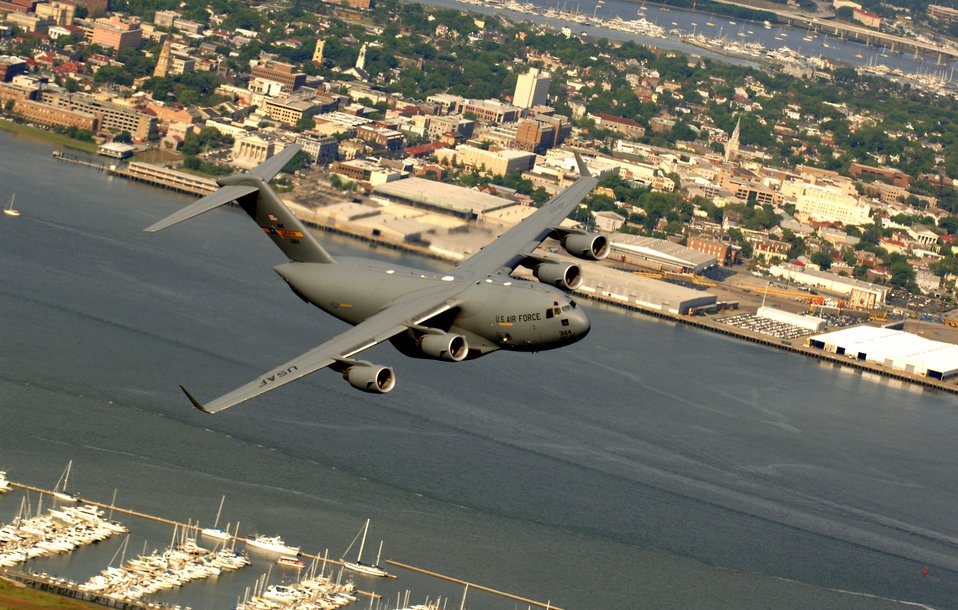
C-17s over Charleston

A C-17 Globemaster III from the 14th Airlift Squadron, Charleston Air Force Base, S.C., flies over downtown Charleston, S.C., during a training mission on Tuesday, May 16, 2006.